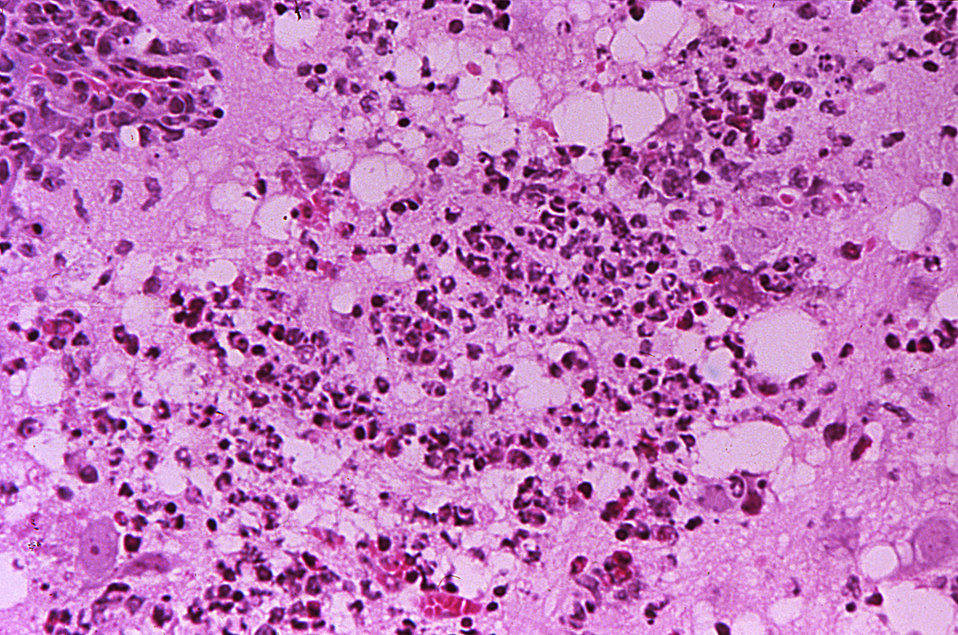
This micrograph reveals the histopathologic changes found in Tamiami virus encephalitis; Mag. 300X.